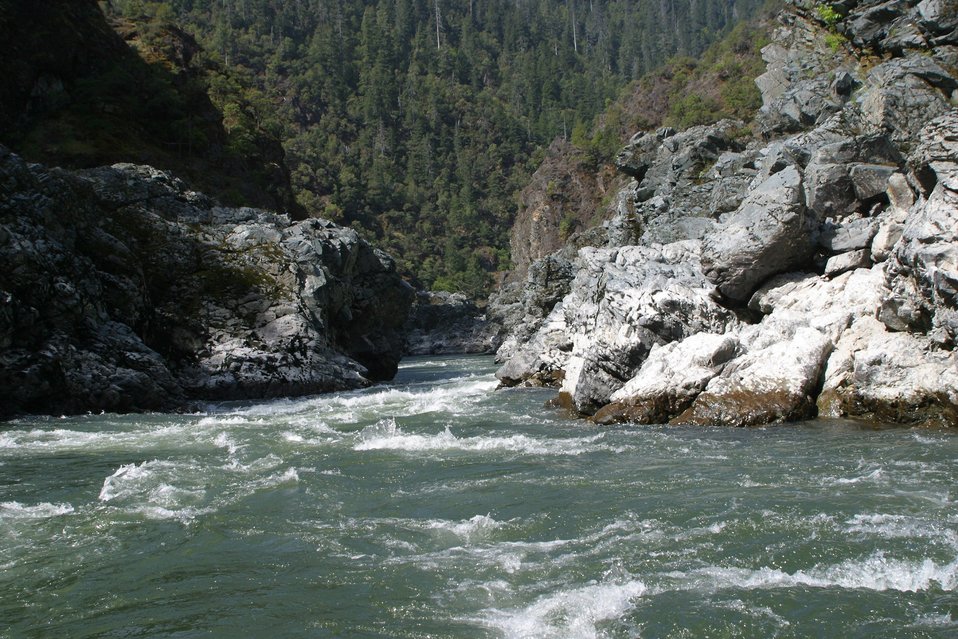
Wild section of the Rogue River from Grave Creek to Foster Bar May 19 to May 22.